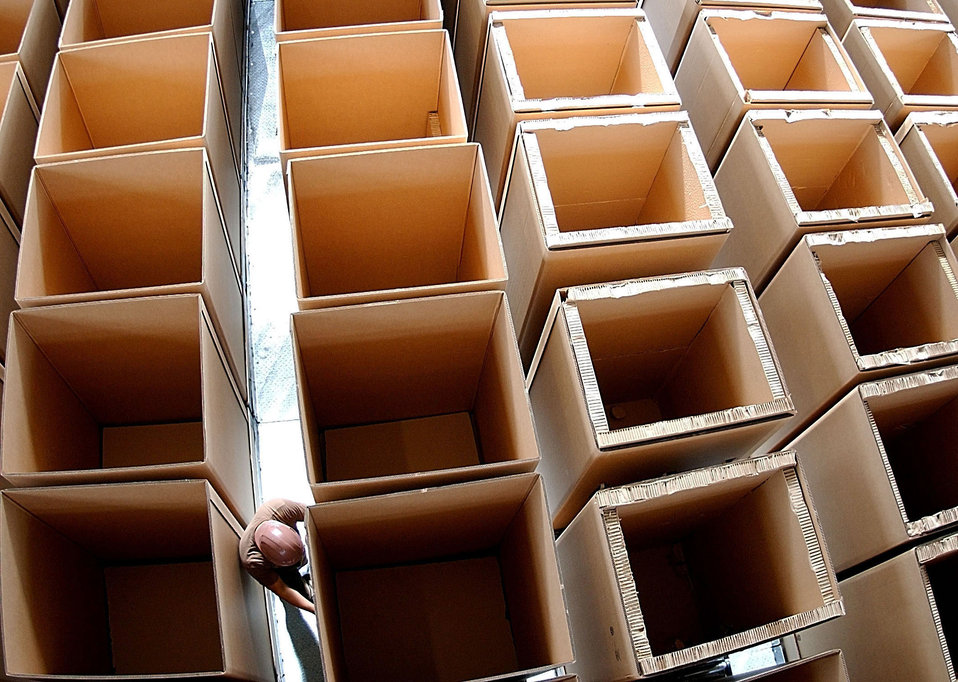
Box Drop

OPERATION ENDURING FREEDOM -- An airman prepares containers for humanitarian daily rations Oct. 4, 2001 at Ramstein Air Base, Germany. The containers were placed on board a C-17 Globemaster III and airdropped Oct. 7 over eastern Afghanistan as part of Operation Enduring Freedom.